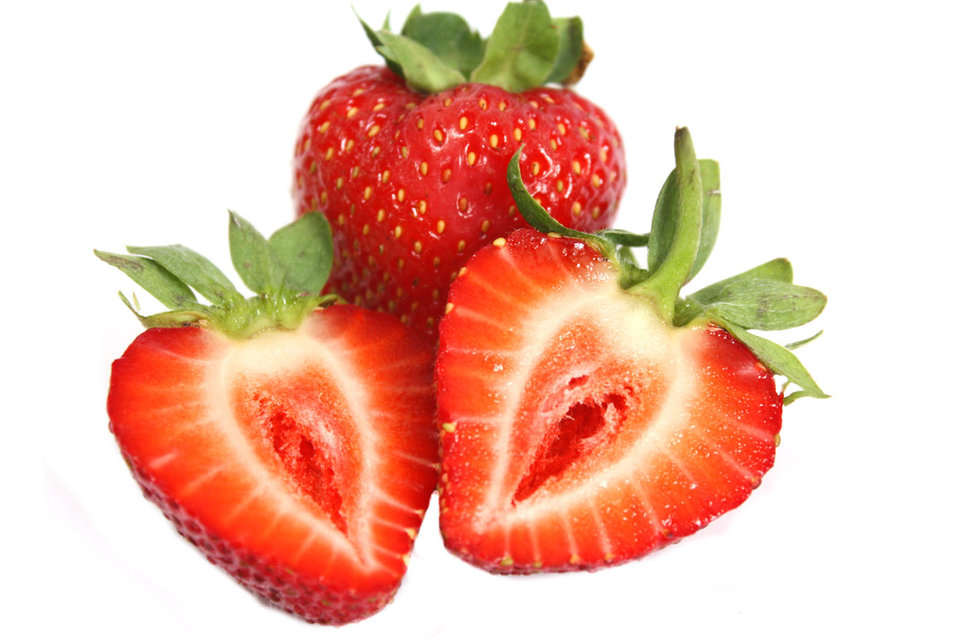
Strawberries

Red strawberries.